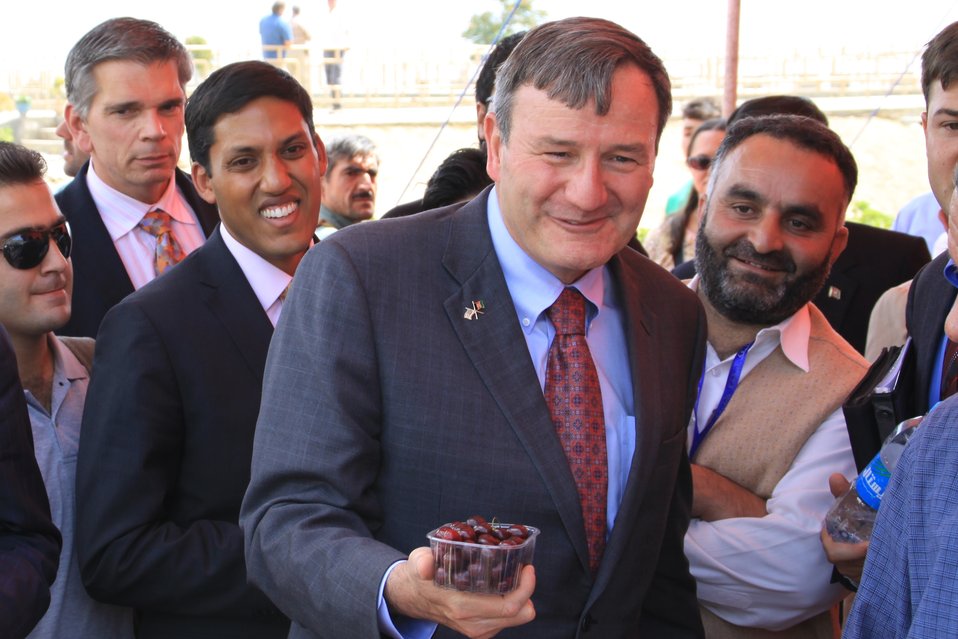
افغان بزګرانو د نوی ۱۰۰ میلیونو ډالرو کرهنیز پرمختیایی بودیجی له لاری لا ډیرو پورونو (قرضو) ته لاس رسی پیدا کړ